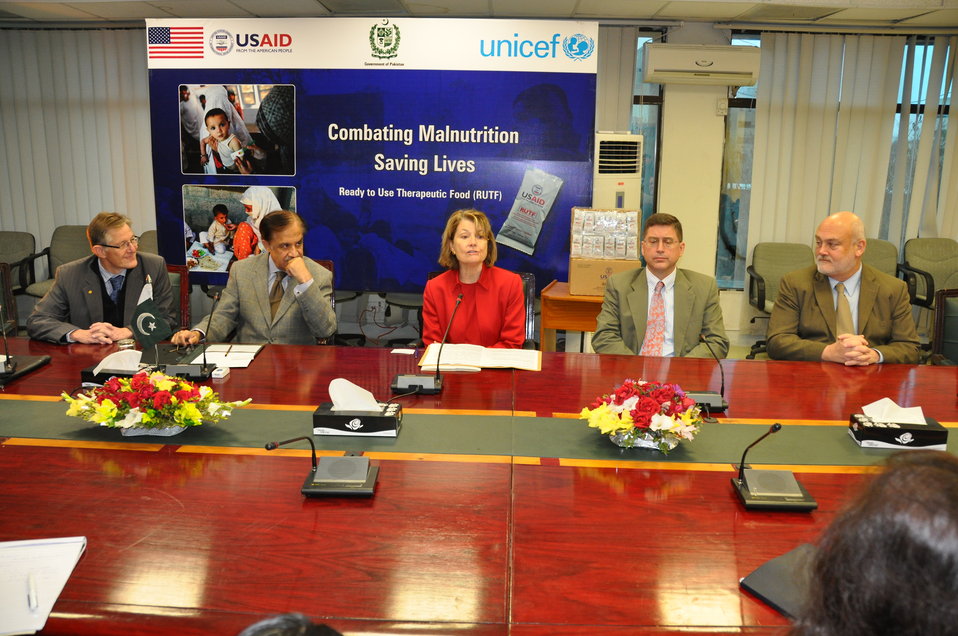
Handover of RUTF 02

USAID Deputy Mission Director Nancy Estes presented 1,330 metric tons of Ready to Use Therapeutic Food to UNICEF Pakistan Country Director Dr. Dan Rohrmann. Mr. Imtiaz Inayat Ellahi, Federal Secretary, Ministry of National Health Services, Regulation and Coordination, was also present at the occasion.